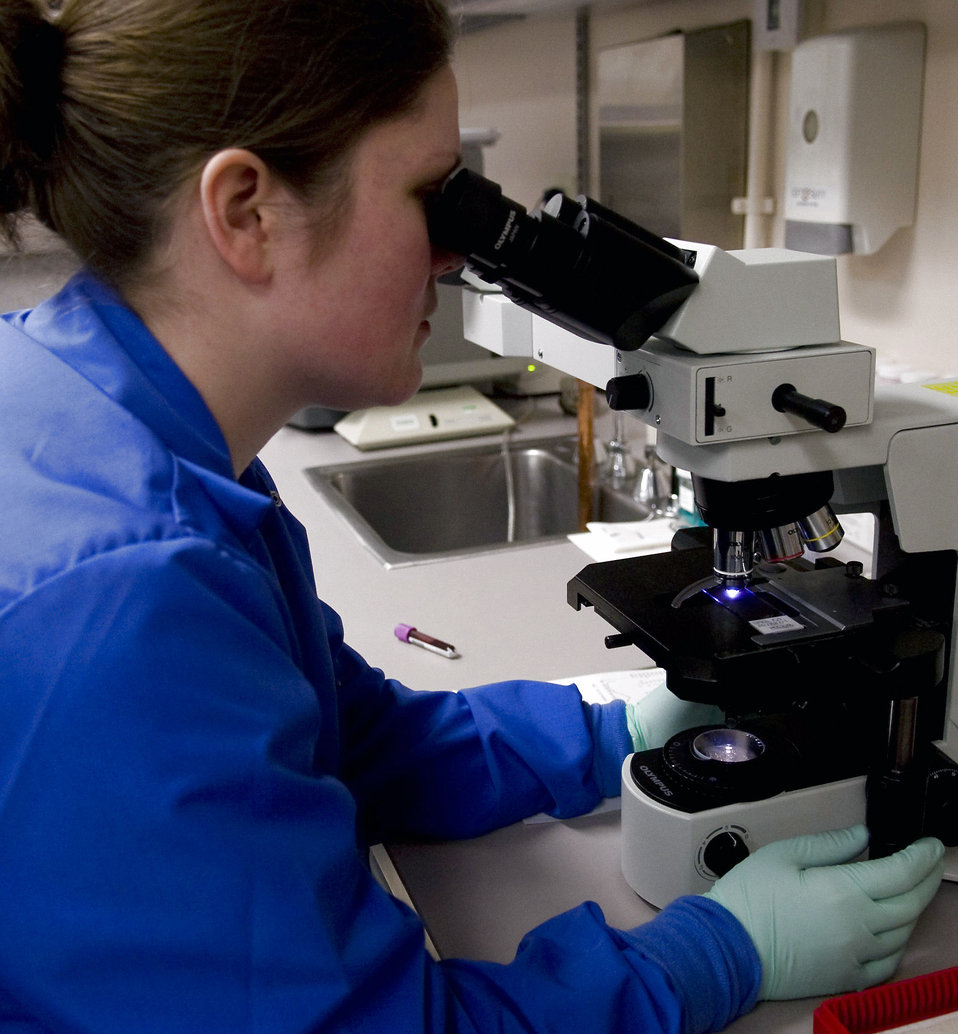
Blood work

Staff Sgt. Toni Thompson looks into a microscope, viewing red and white blood cells magnified at 100 times their original size March 4 at Eielson Air Force Base, Alaska. The purpose of the examination is to ensure the blood contains no disease or infection. Sergeant Thompson is a 354th Medical Group clinical lab technician.